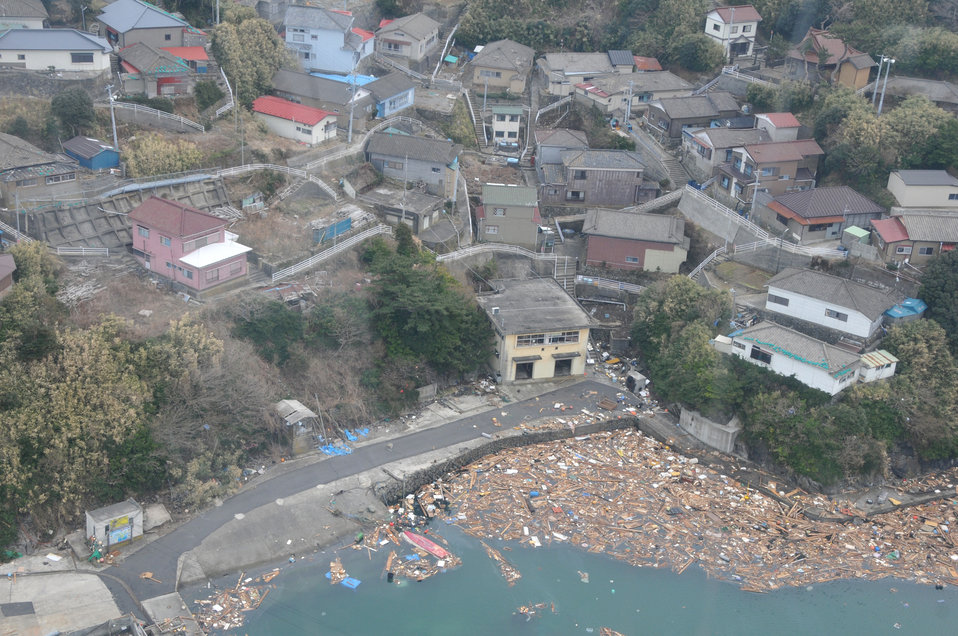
Search and rescue

An Air Force search and rescue team in an HH-60 G Pave Hawk helicopter surveys the damage as it flies over a coastal inlet in northeastern Japan.